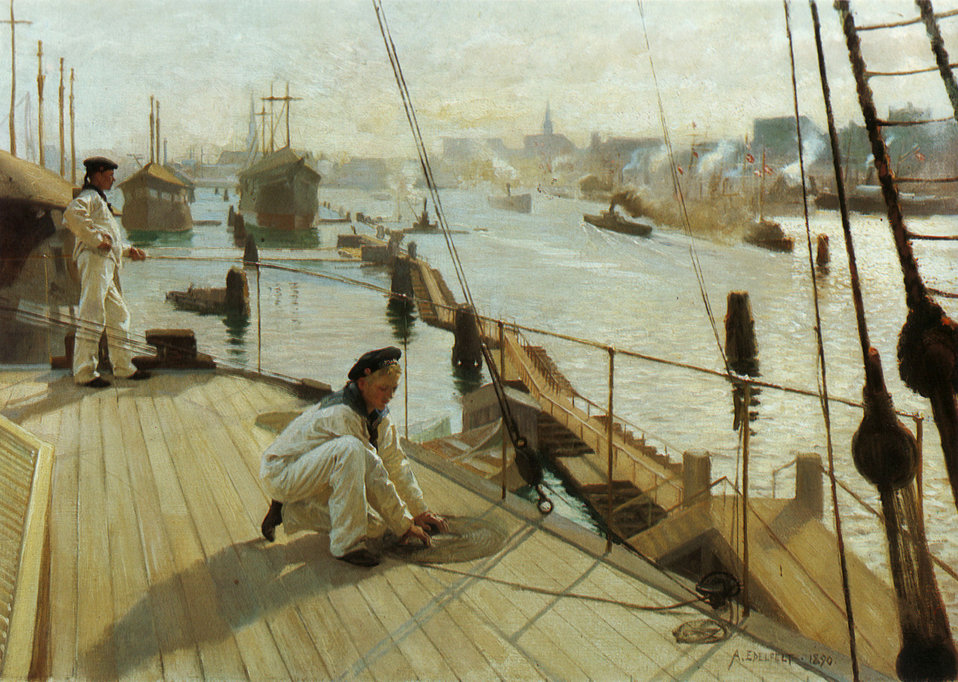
Albert Edelfelt - Kööpenhaminan Ankkuripaikalta II